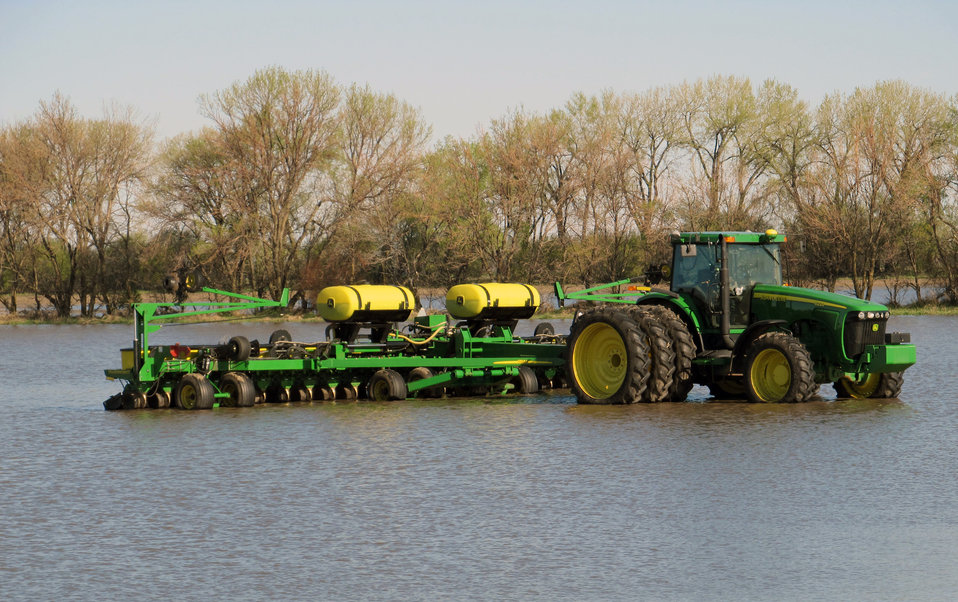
Flooding and water damage in the Park and Tongue River Watersheds located in Cavalier, Pembina and Cavalaier Counties in ND on Thursday, May 23, 2013.